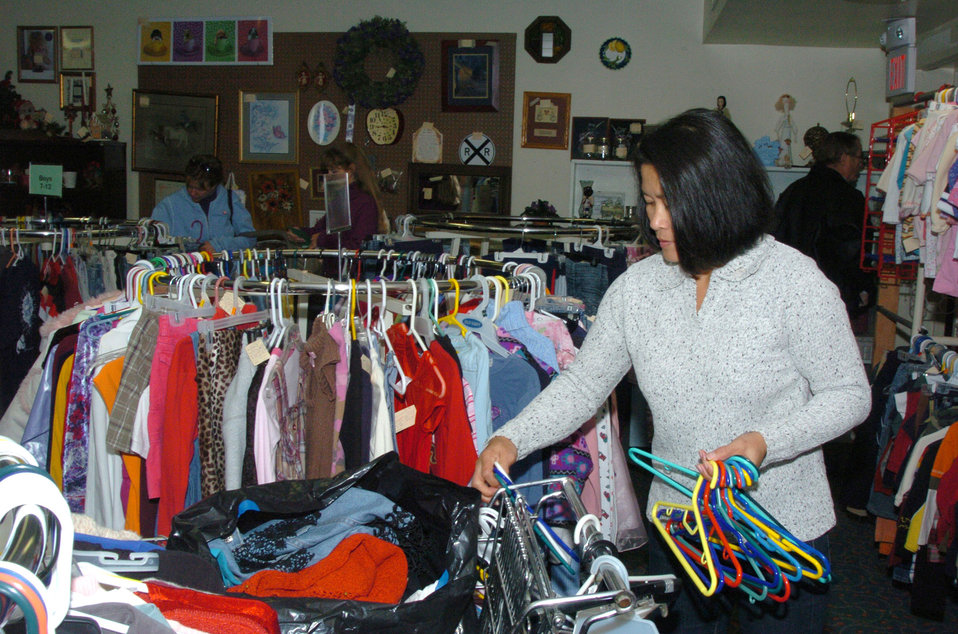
Healthier through helping: Volunteerism adds to life

Dahlia Weslowski volunteers at the thrift shop at Altus Air Force Base, Okla.